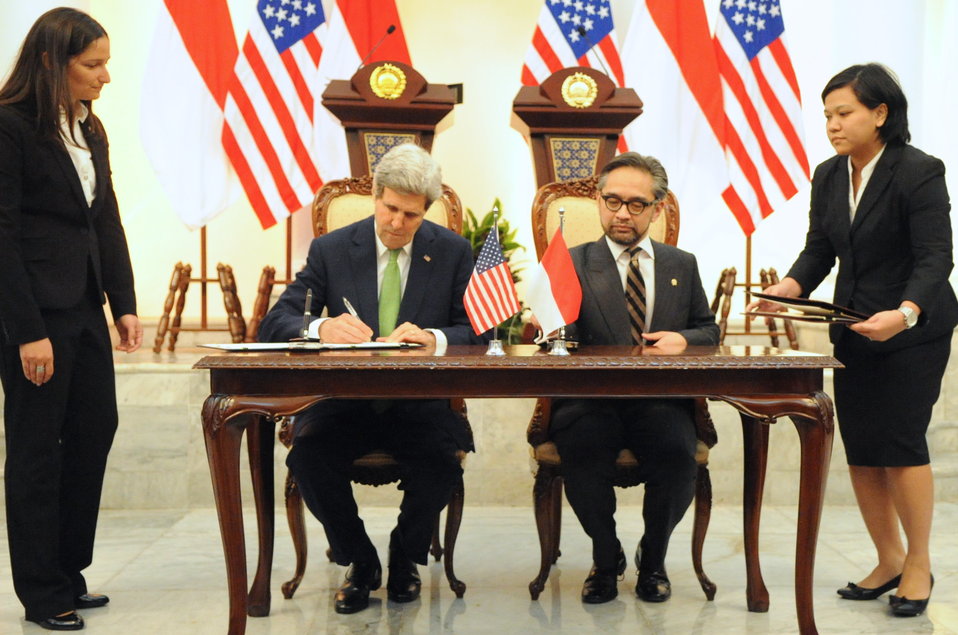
Secretary Kerry and Indonesian Foreign Minister Natalegawa Sign Memorandum of Understanding

U.S. Secretary of State John Kerry and Foreign Minister Marty Natalegawa sign a Memorandum of Understanding between their two nations related to South-South Triangular Cooperation before a news conference in Jakarta, Indonesia on February 17, 2014.